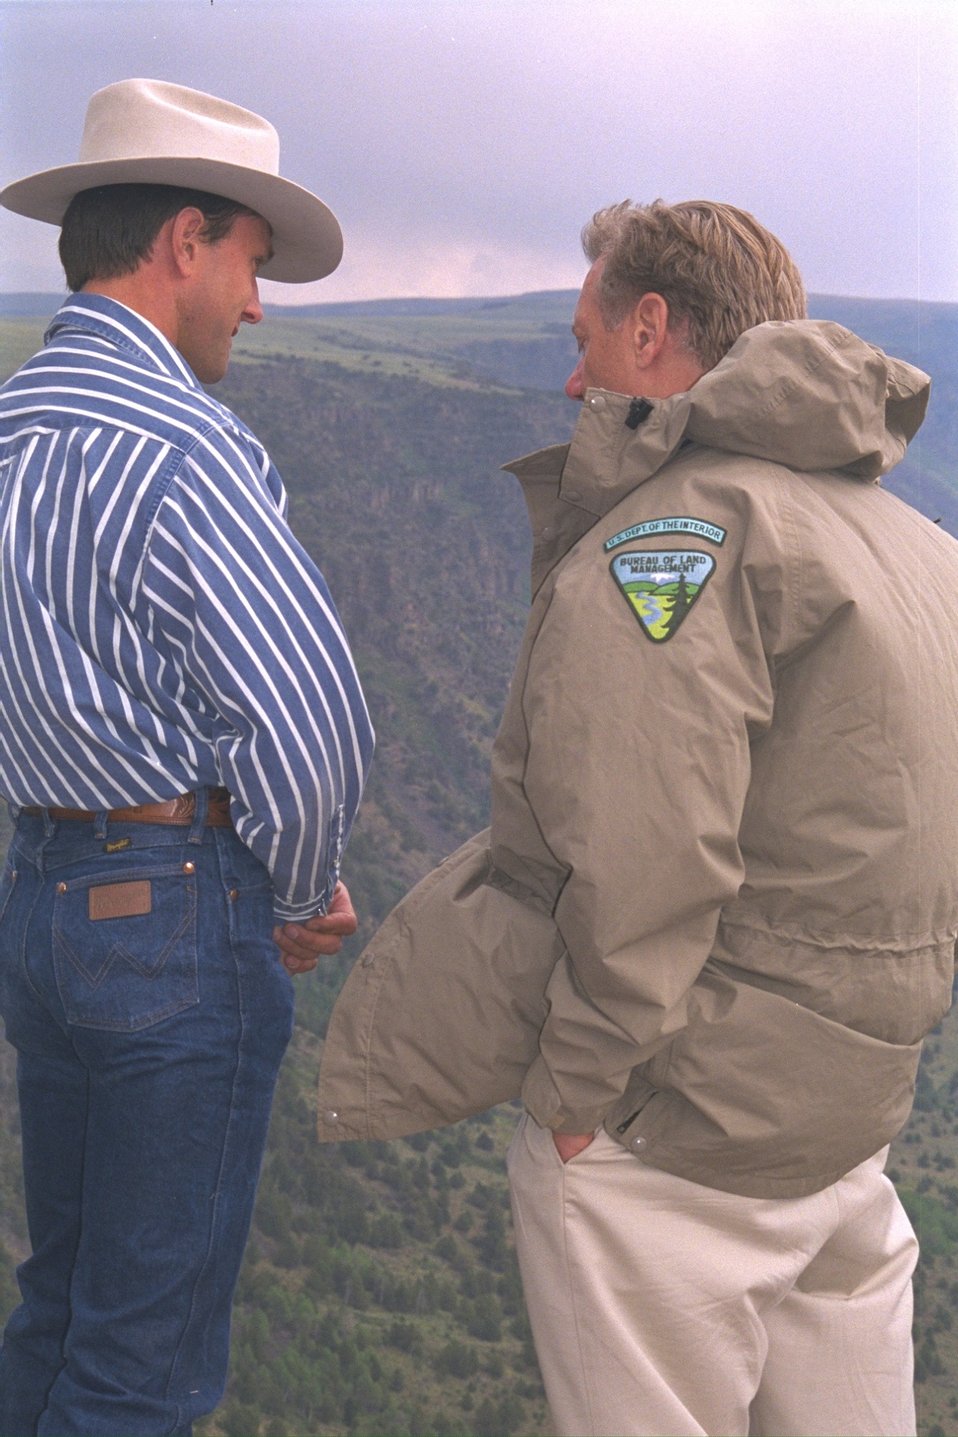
Stacie Davies, the manager of Roaring Springs Ranch, and Secretary Bruce Babbitt at Big Indian Gorge overlook.